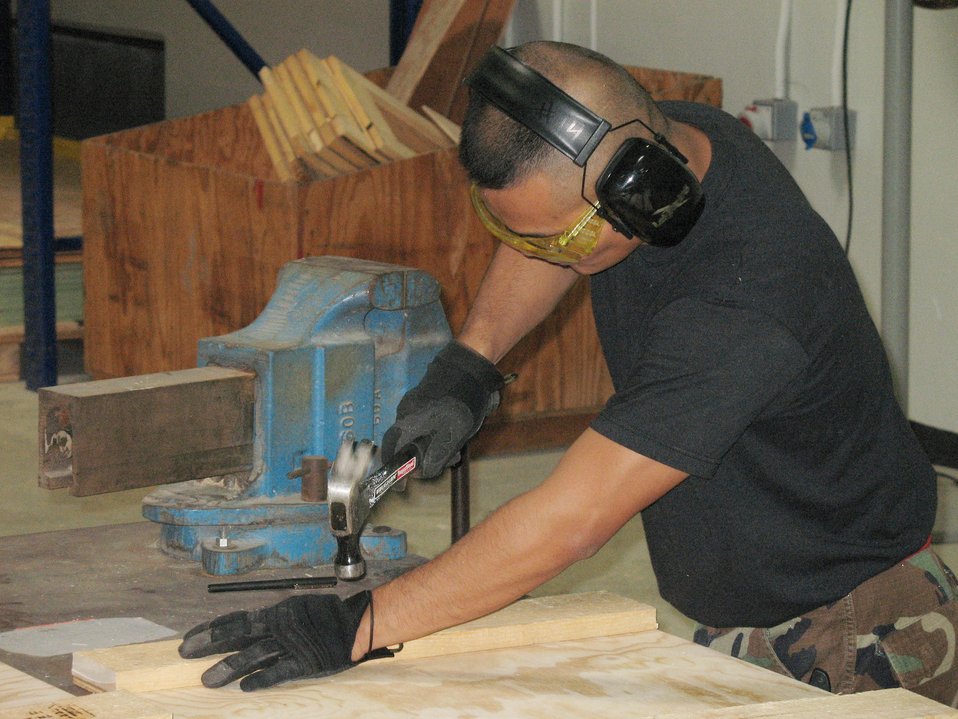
Incirlik's logistics team makes logical money saving move

Staff Sgt. Ronnel Villodres builds a crate May 9 for a C-17 Globemaster III brake being shipped out of Incirlik Air Base, Turkey. Rather than contracting out crates to be made, the base will save nearly $15,000 per year fabricating their own packaging materials. Sergeant Villodres is assigned to the 39th Logistics Readiness Squadron.